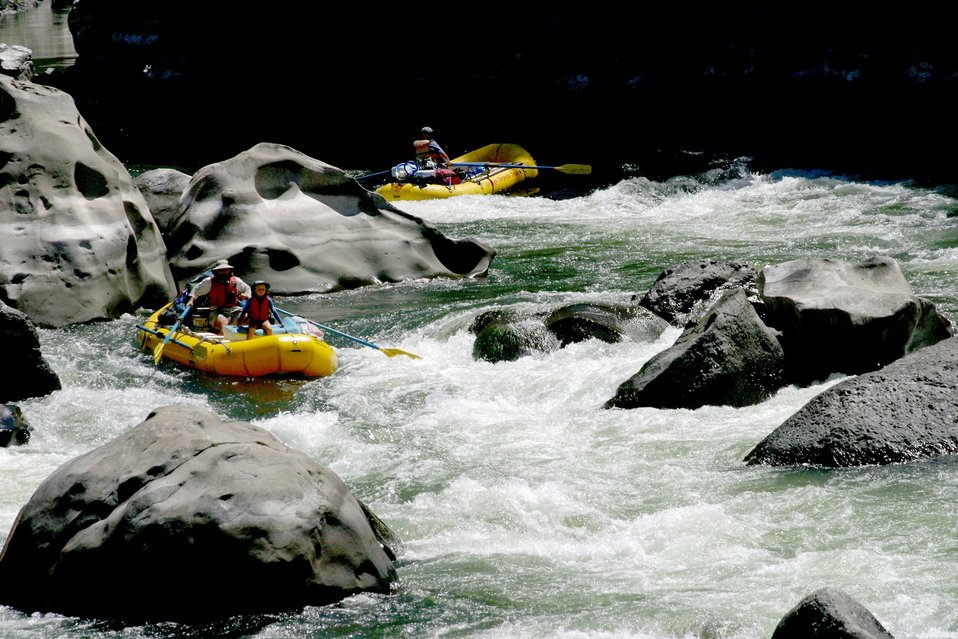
Boaters negotiate Blossom Rapids.